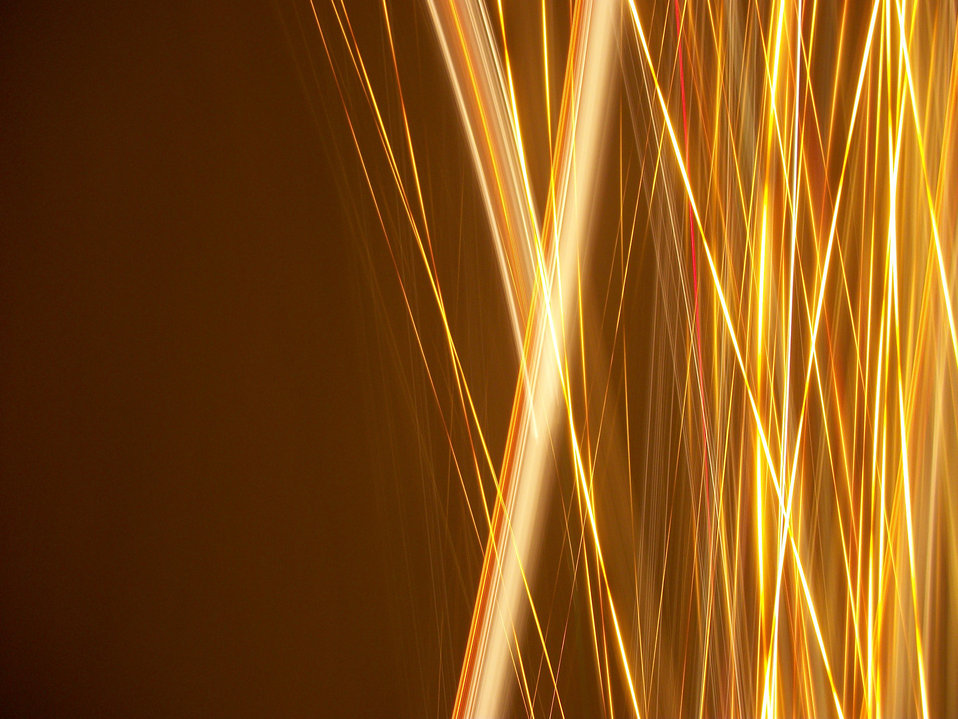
Kinetic 5

Photo of kinetic art.